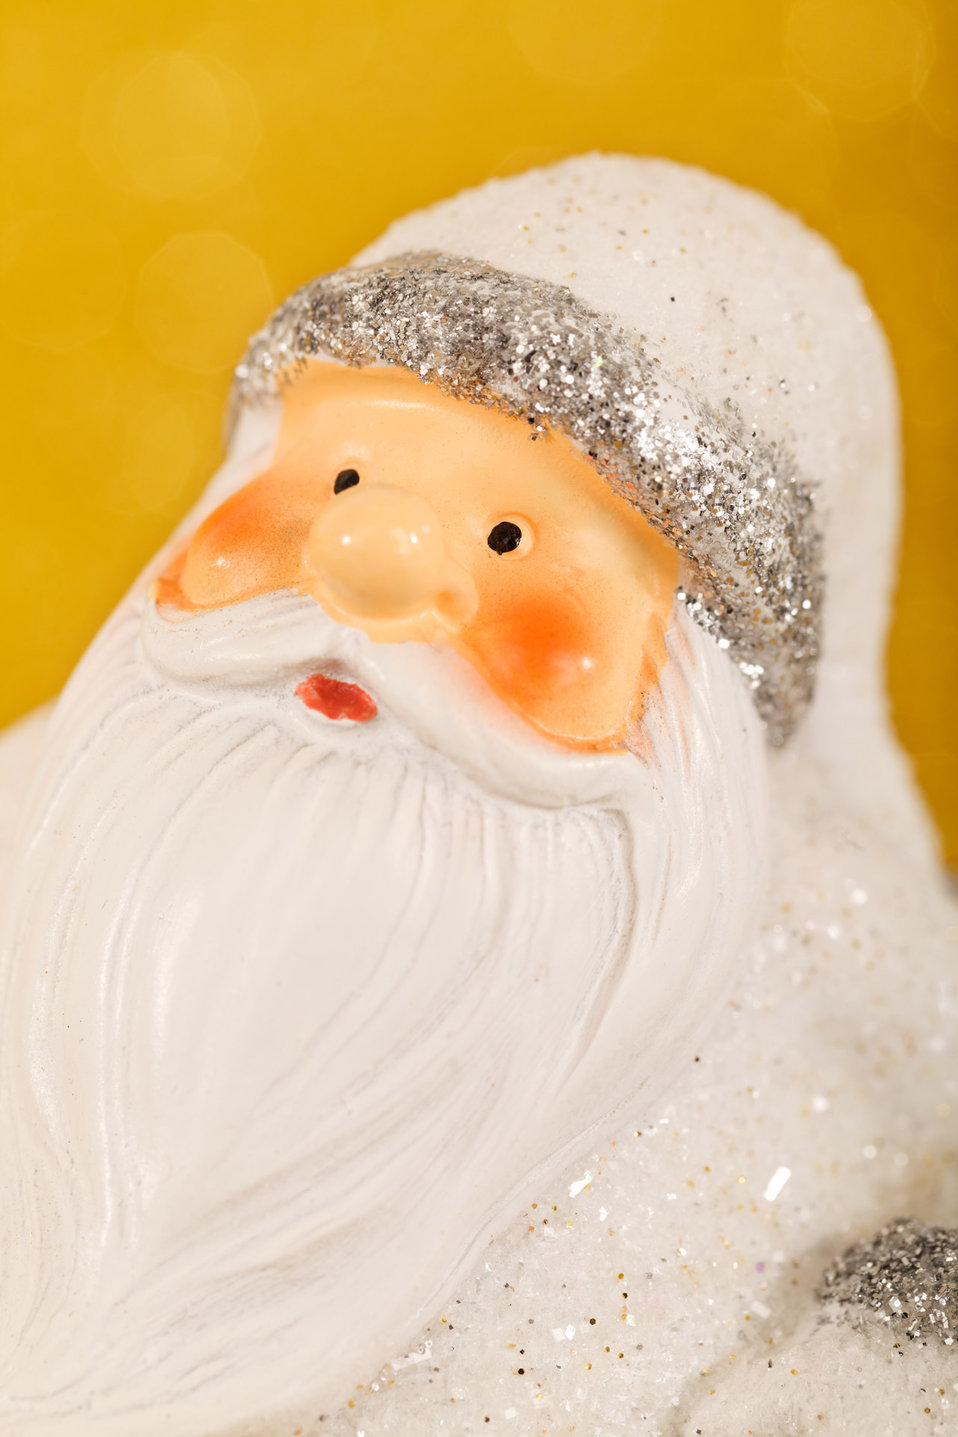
Santa claus portrait in white on golden background.